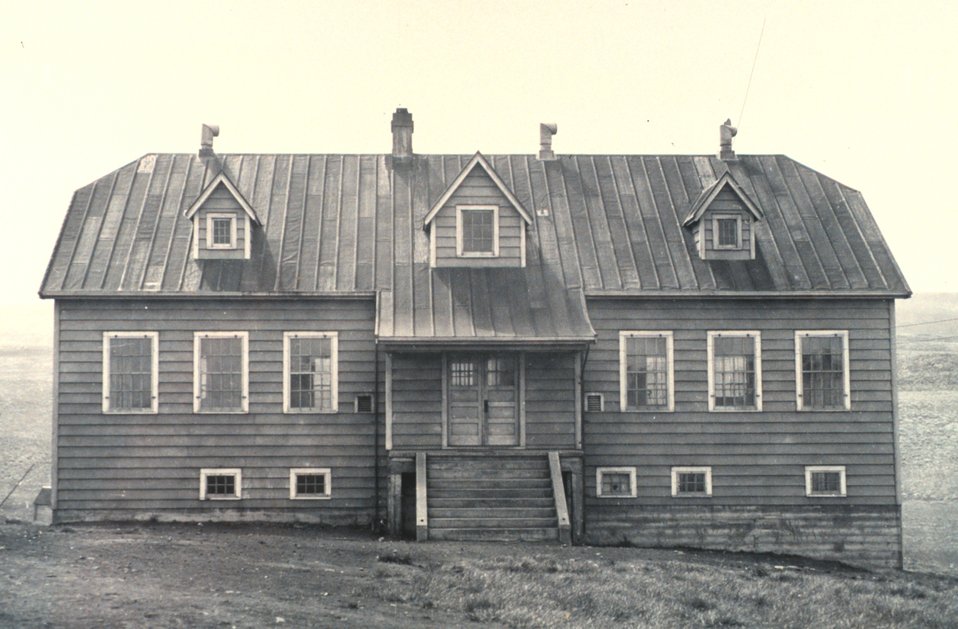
The school building on St. Paul Island. F&WS 10,071.